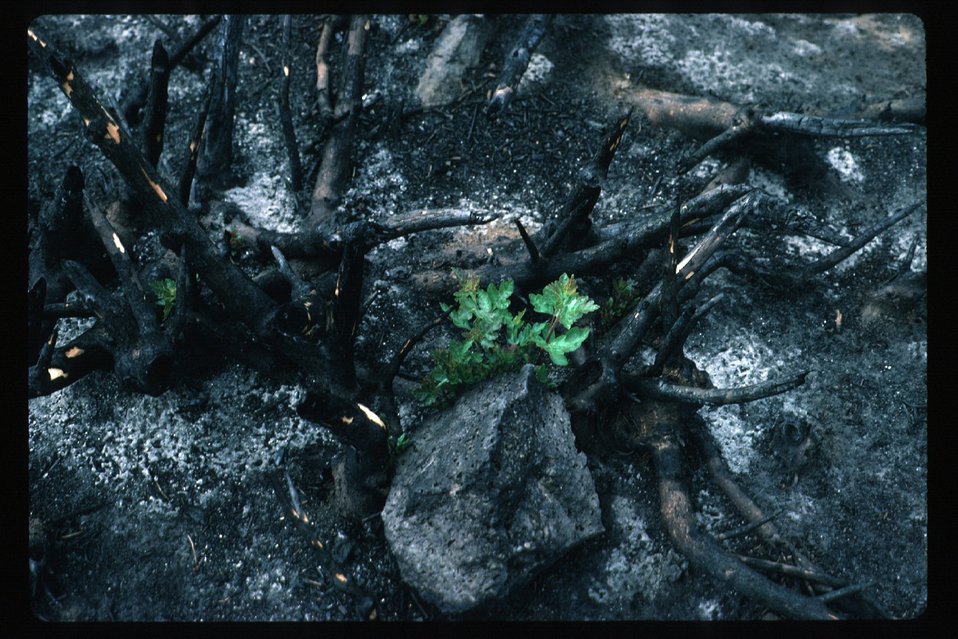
Indian lemonade bush Rhus trilobata Brush, grasses Wildflowers